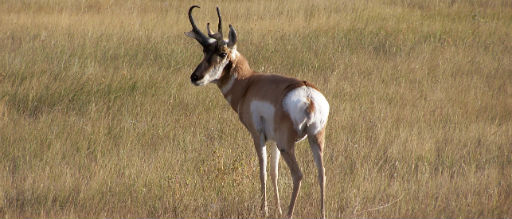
Pronghorn antelope on Bowdoin NWR